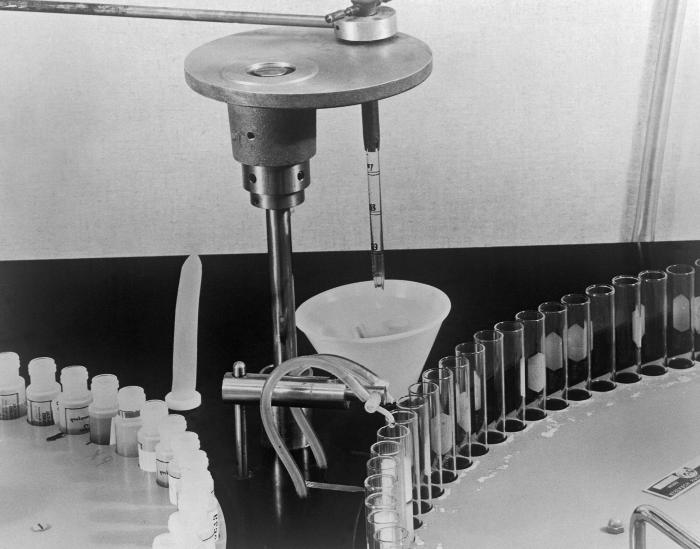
This photograph, taken at a laboratory on the Centers for Disease Control's Chamblee, Georgia campus in 1963, showed a sampling machine that was used in the analytical determination of protein-bound iodine (PBI).